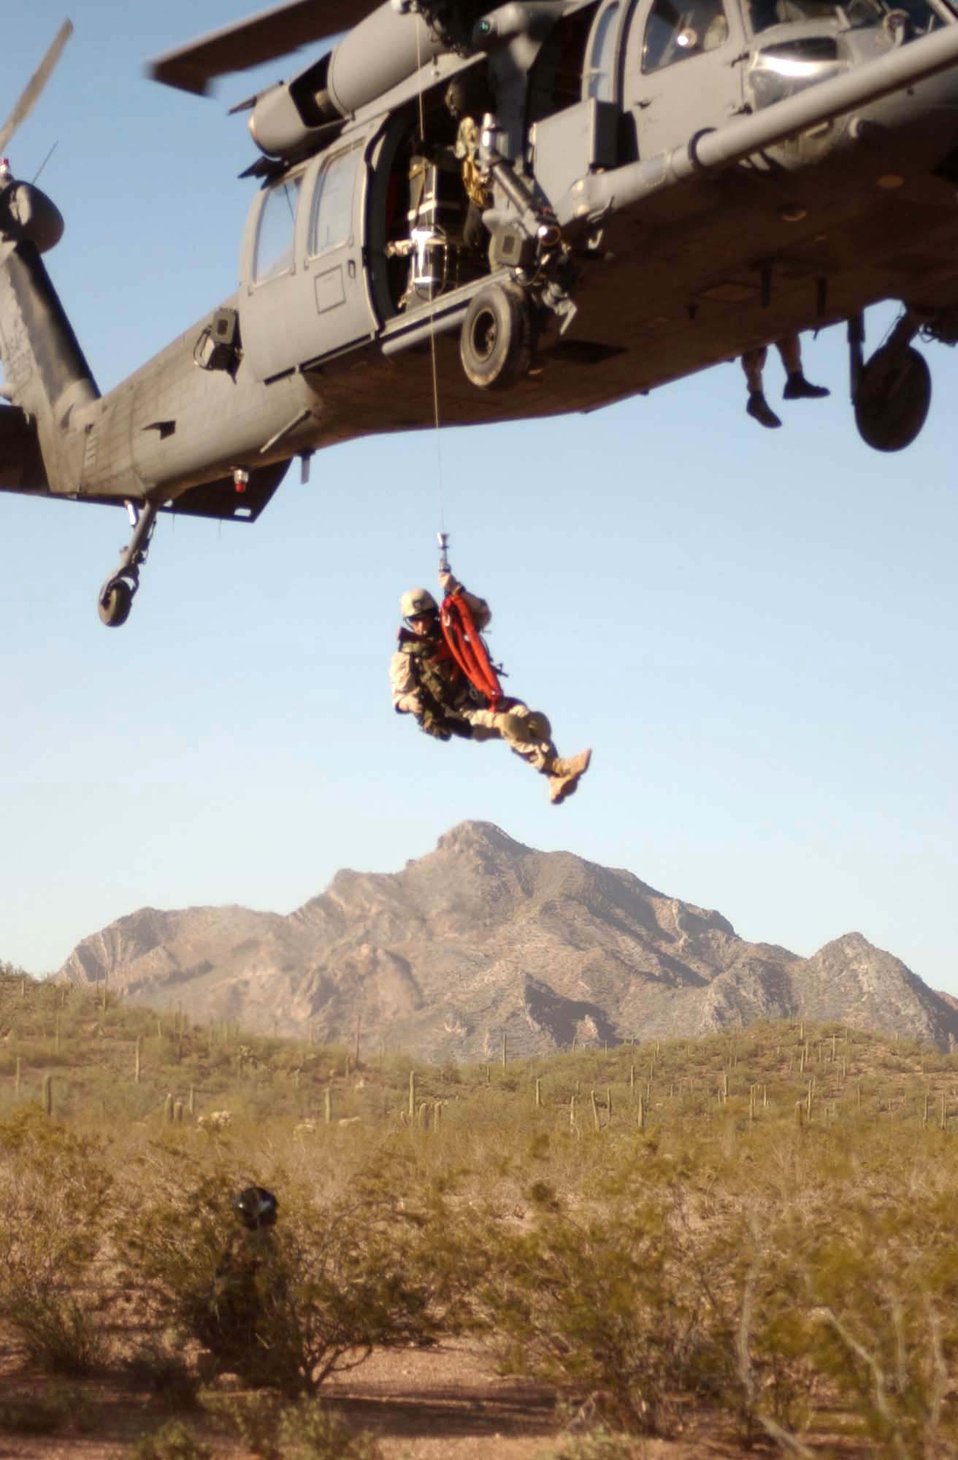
Hoist 'em up

NEAR TUCSON, Ariz -- Pararescuemen from the 304th Rescue Squadron at the Portland Air National Guard Base, Ore., practice their rescue skills with an HH-60 Pave Hawk flown by a crew from the 305th RQS at nearby Davis-Monthan Air Force Base. During the exercise here, the 304th RQS Airmen practiced rescue scenarios and desert survival skills.